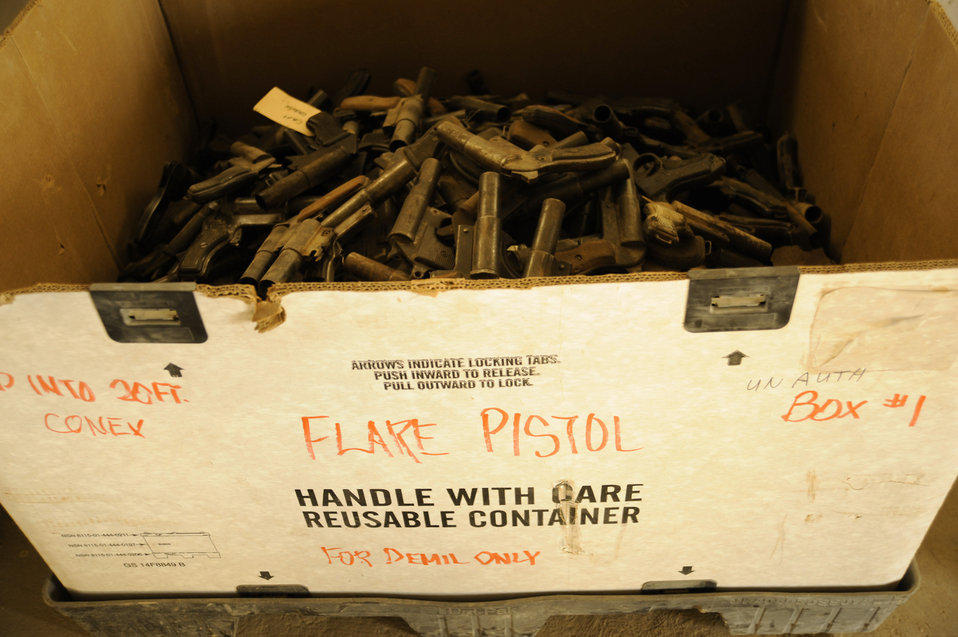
Airman leads team in managing enemy's weapons cache

A box of captured enemy flare pistols is prepared to be shipped at Taji Military Base, Iraq. All captured enemy weapons are accounted for before getting destroyed. AK-47 rifles, knives and pistol are some of the captured enemy weapons that have been turned in to be destroyed.